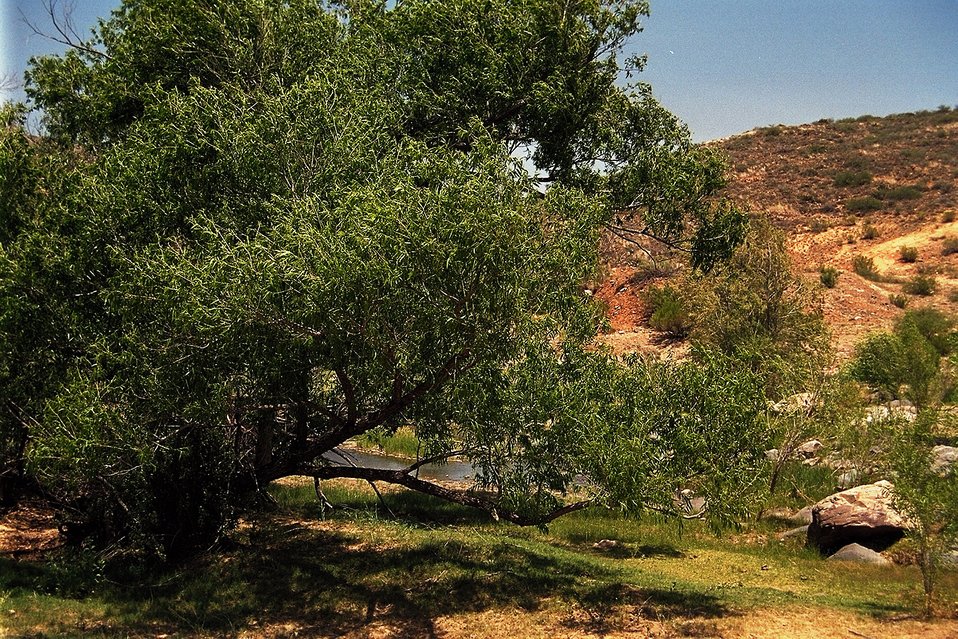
A large tree creates some shade from the Arizona sun in a valley with the Agua Fria River.